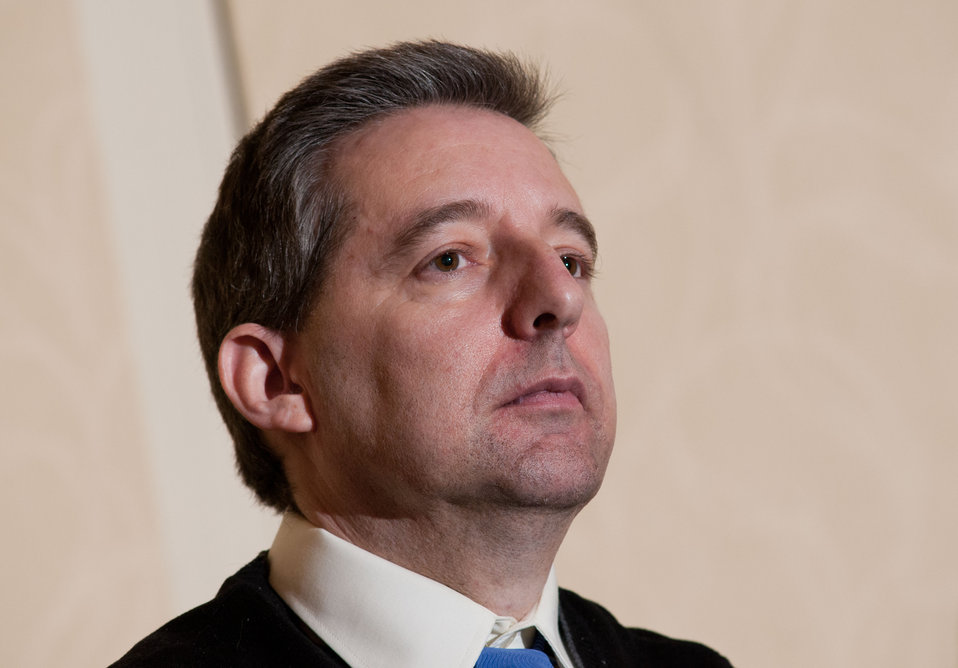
National Center for Weather and Climate Prediction - Climate Prediction Center’s Anthony Artusa, during the U.S. Department of Agriculture (USDA) 2013 Agricultural Outlook Forum held at the Crystal Gateway Marriott Hotel in Arlington, VA on Friday, Feb. 22, 2013. The breakout session generally focused on the Weather Outlook for 2013. The presentation is available at www.usda.gov/oce/forum/presentations/Artusa.ppt.